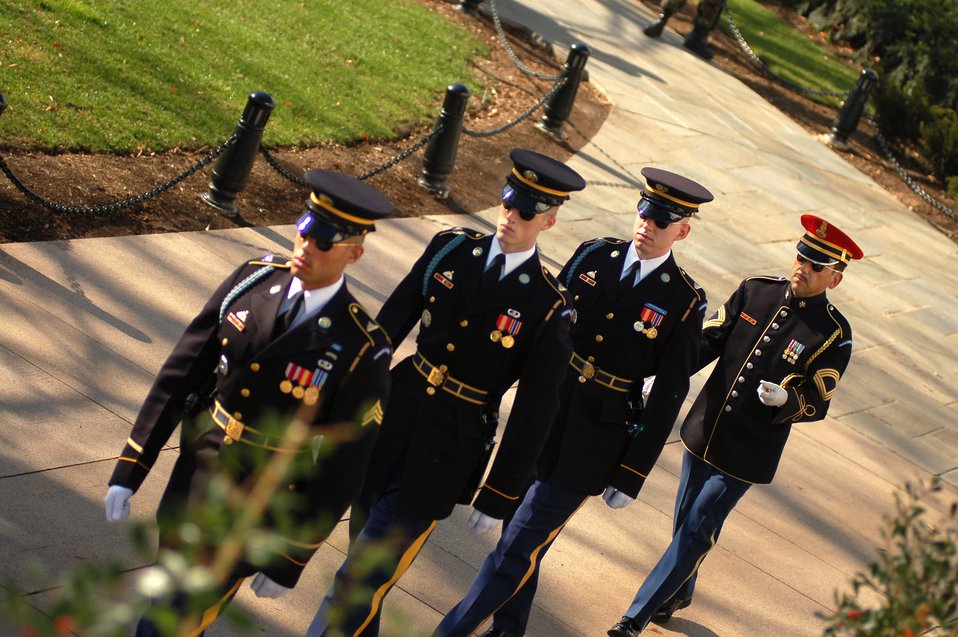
Not forgotten

The Army team who laid the wreaths at the Tomb of the Unkown Soldier marches away following a ceremony Dec. 14 at Arlington National Cemetery in Virginia.